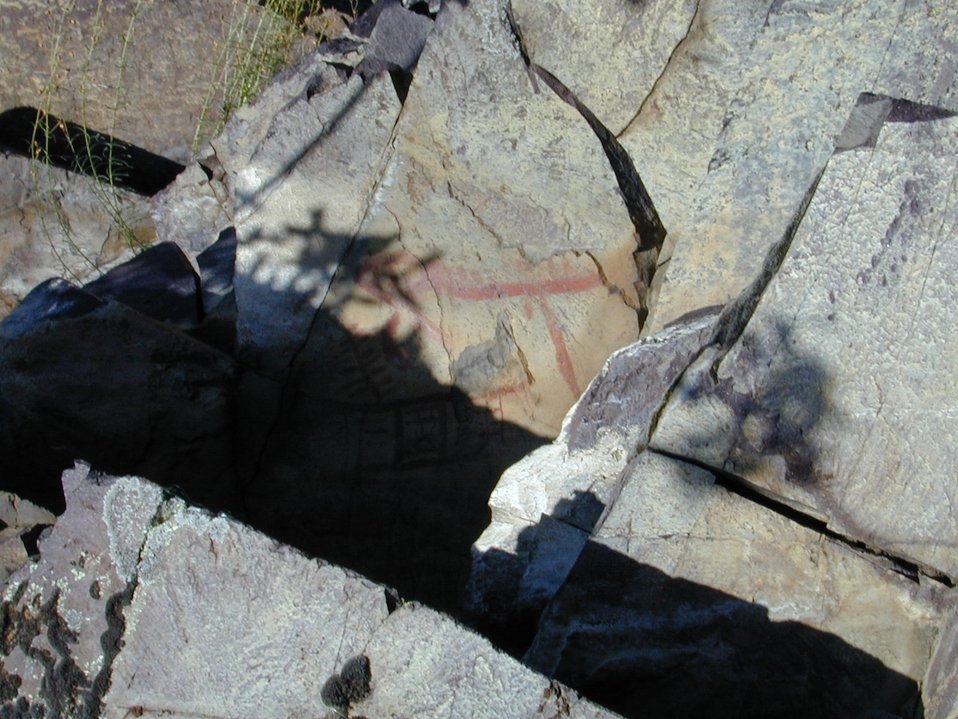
Cultural resources Petroglyphs on Lower Salmon River Cottonwood Field Office UCSC Upper Columbia Salmon Clearwater District